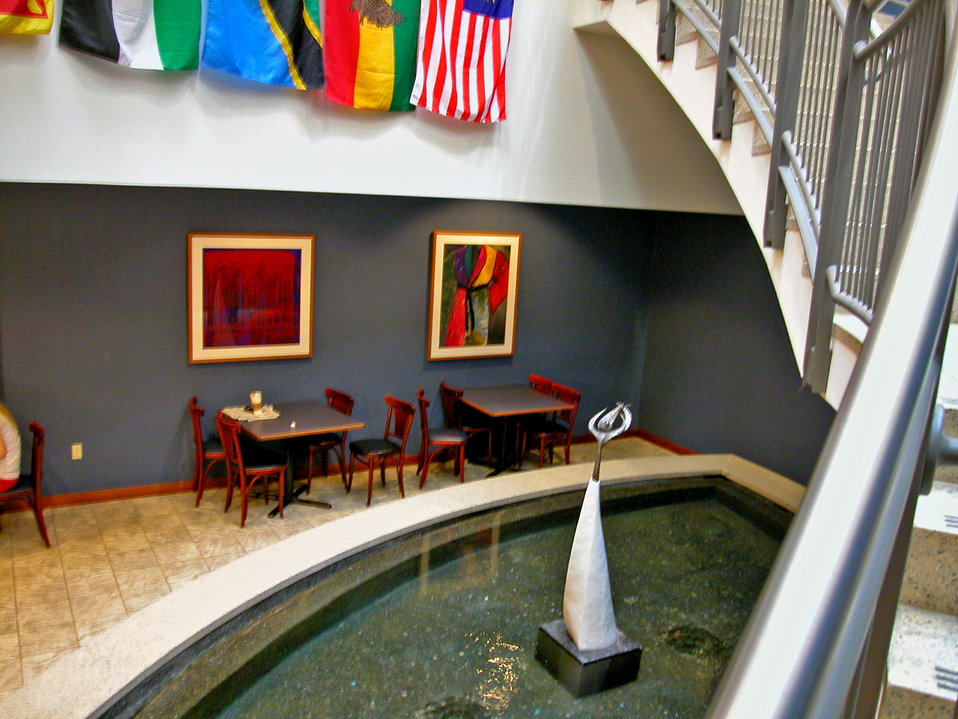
This 1998 photograph depicted a publicly-accessible staircase, which had been designed with consideration for those that were visually-impaired. Note that the underside aspect of this structure had been cordoned off by the inclusion of a fountain-pool, and seating area, in order to prevent the visually-impaired from walking beneath the low-hanging staircase, thereby, avoiding head or bodily injuries. In this way, normally unused, though potentially dangerous walk-through space, was turned into an attractive, and safe amenity. See PHIL# 9047, and 9049 for additional views of this structure.